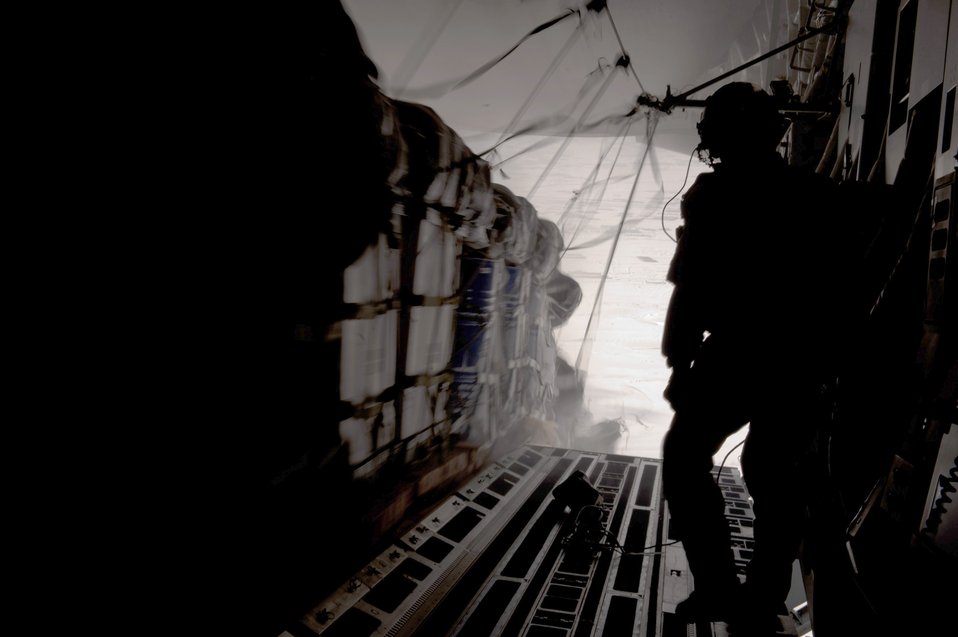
Air delivery cargo drop

Staff Sgt. Christopher Bankston watches as air delivery cargo is released from a C-17 Globemaster III Mar. 3, 2011, over Afghanistan, to remote operating bases in the region. Sergeant Bankston is a loadmaster assigned to the 816th Expeditionary Airlift Squadron.